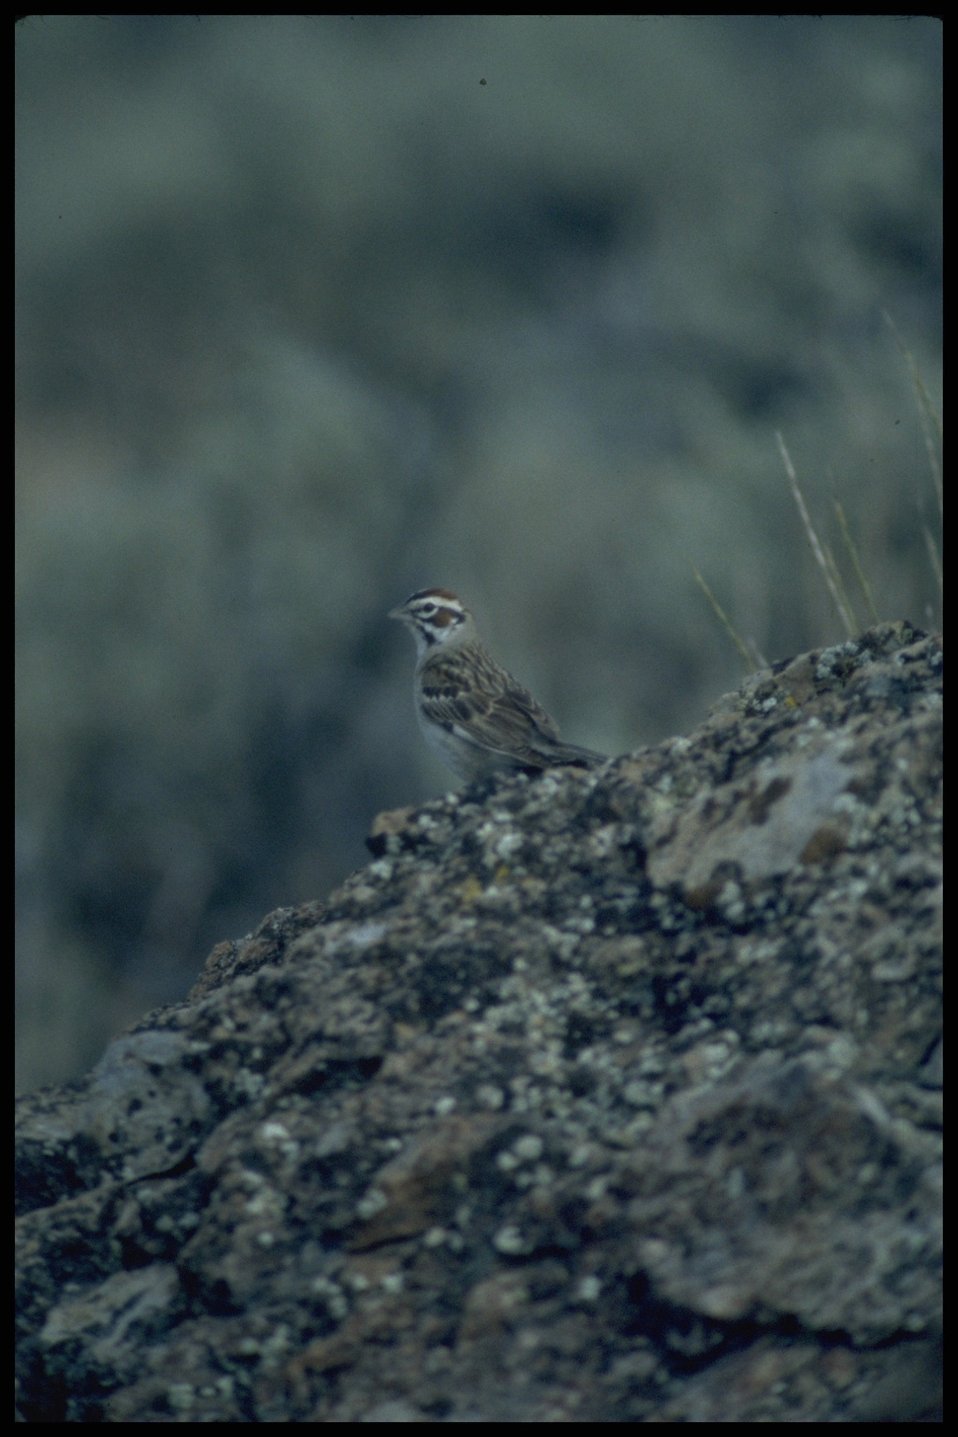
Sparrow, Lakeview District.